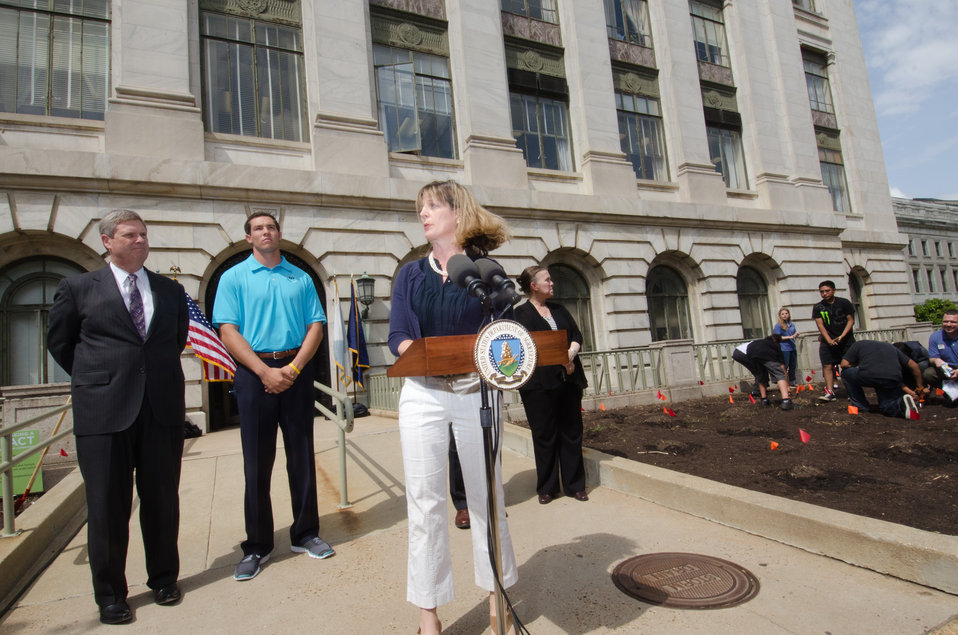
Executive Director of First Lady Michelle Obama’s Let’s Move! Campaign Robin Schepper (at podium) told of another community garden where a girl was adamantly proud of the radish she grew herself; behind Ms. Schepper is Agriculture Secretary Tom Vilsack (blue tie) and St. Louis Rams Quarterback Sam Bradford (blue shirt); Director of the Bureau of Indian Education, and Janie Hipp (striped blouse), Senior Advisor to Secretary Vilsack with the USDA Office of Tribal Relations on Wednesday, April 27, 20ll in Washington, DC. More than 30 Students from Eastern and Western Tribes, Southeast Alaska, and Tuba City, Arizona came to the Nation’s Capitol to plant vegetable seeds that are indigenous to North America. Bradford is a citizen of the Cherokee Nation. The garden is called The Roots of American Agriculture, and is part of the Headquarters’ People’s Garden.